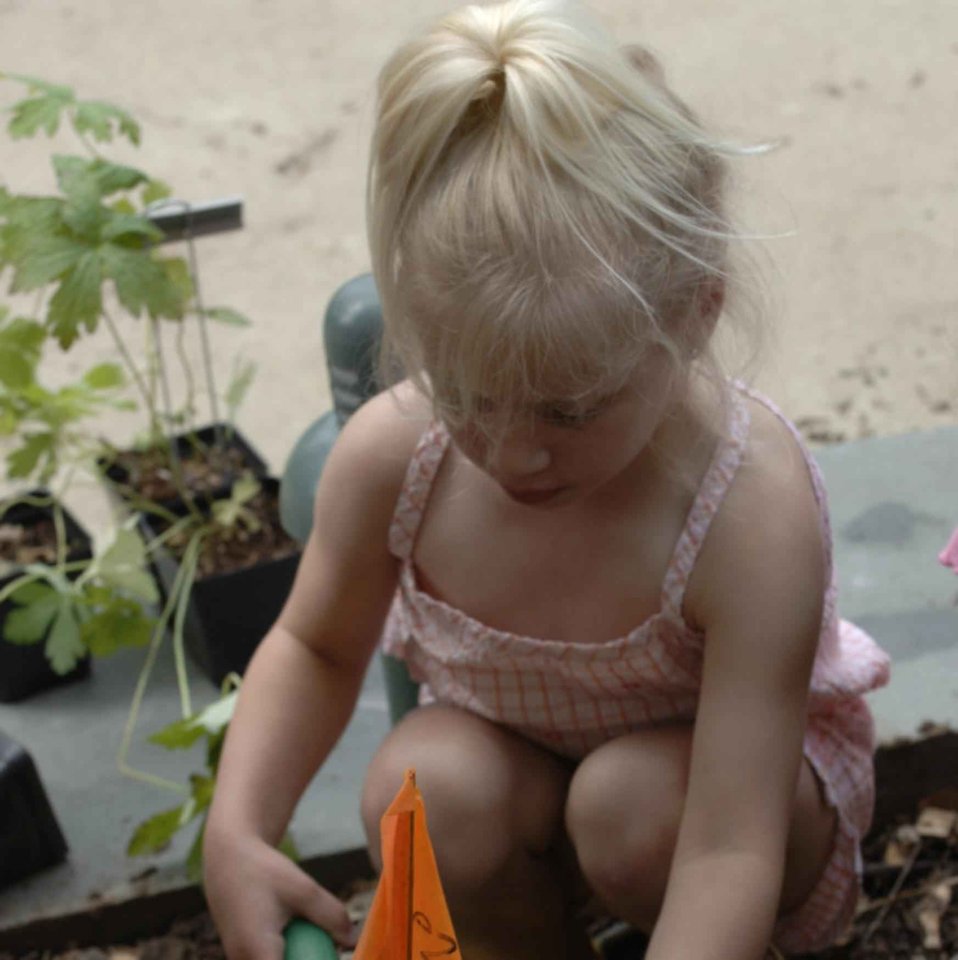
English:
Image title: Pretty young girl Image from Public domain images website, http://www.public-domain-image.com/full-image/people-public-domain-images-pictures/children-kids-public-domain-images-pictures/pretty-young-girl.jpeg.html